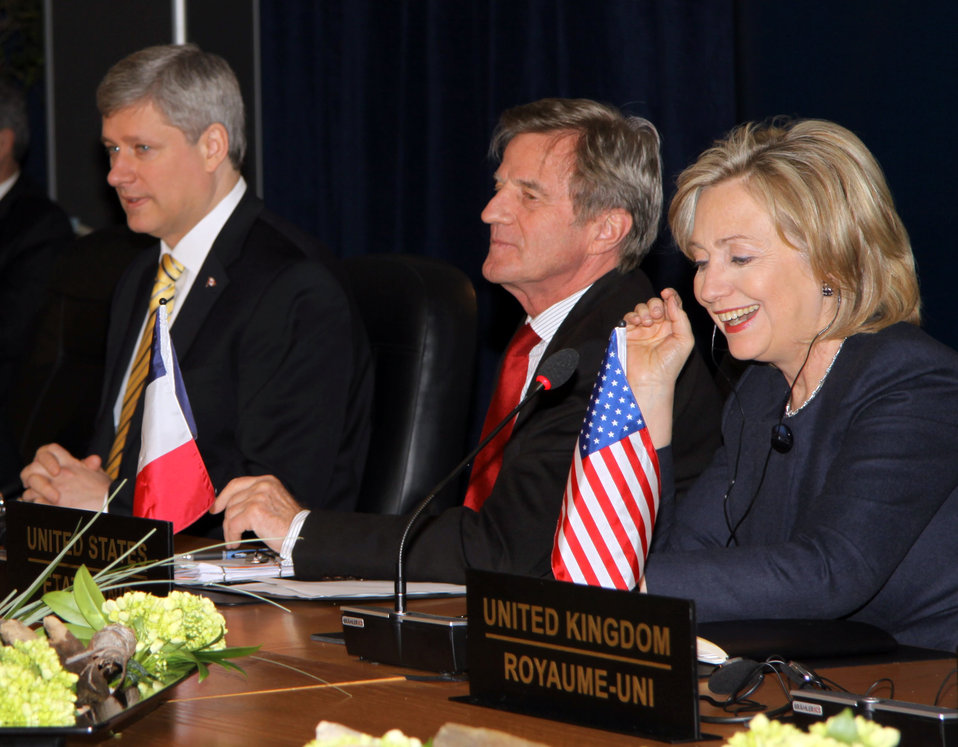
Secretary Clinton Meets With Leaders at G8 Foreign Ministers Meeting

U.S. Secretary of State Hillary Rodham Clinton provides remarks with Canadian Prime Minister Stephen Harper (left) and French Foreign Minister Bernard Kouchner (center) during the G8 Foreign Ministers Meeting in Ottawa, Canada March 29, 2010.